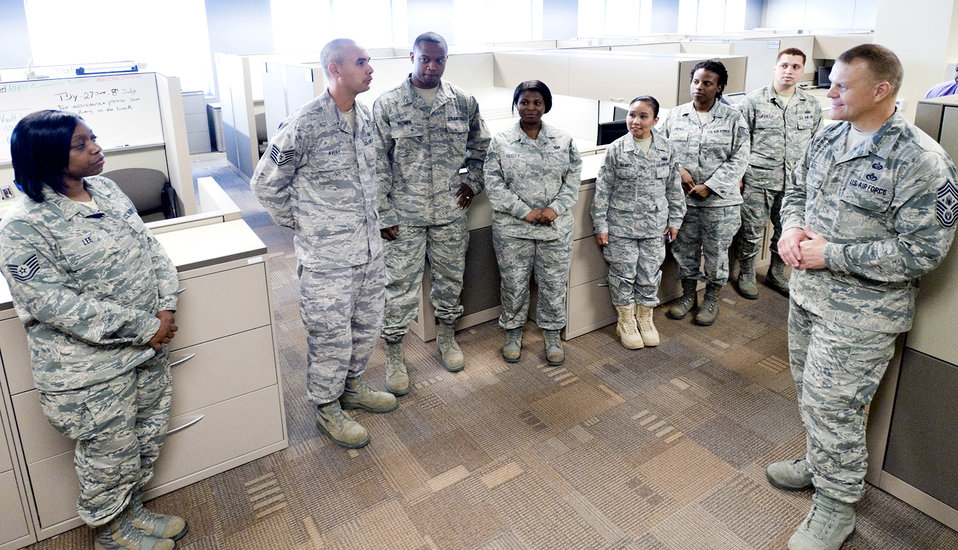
Chief Roy

Chief Master Sergeant of the Air Force James A. Roy visits with Air Force Office of Special Investigations support staff members July 11, 2011, at the AFOSI headquarters at Marine Corps Base Quantico, Va.